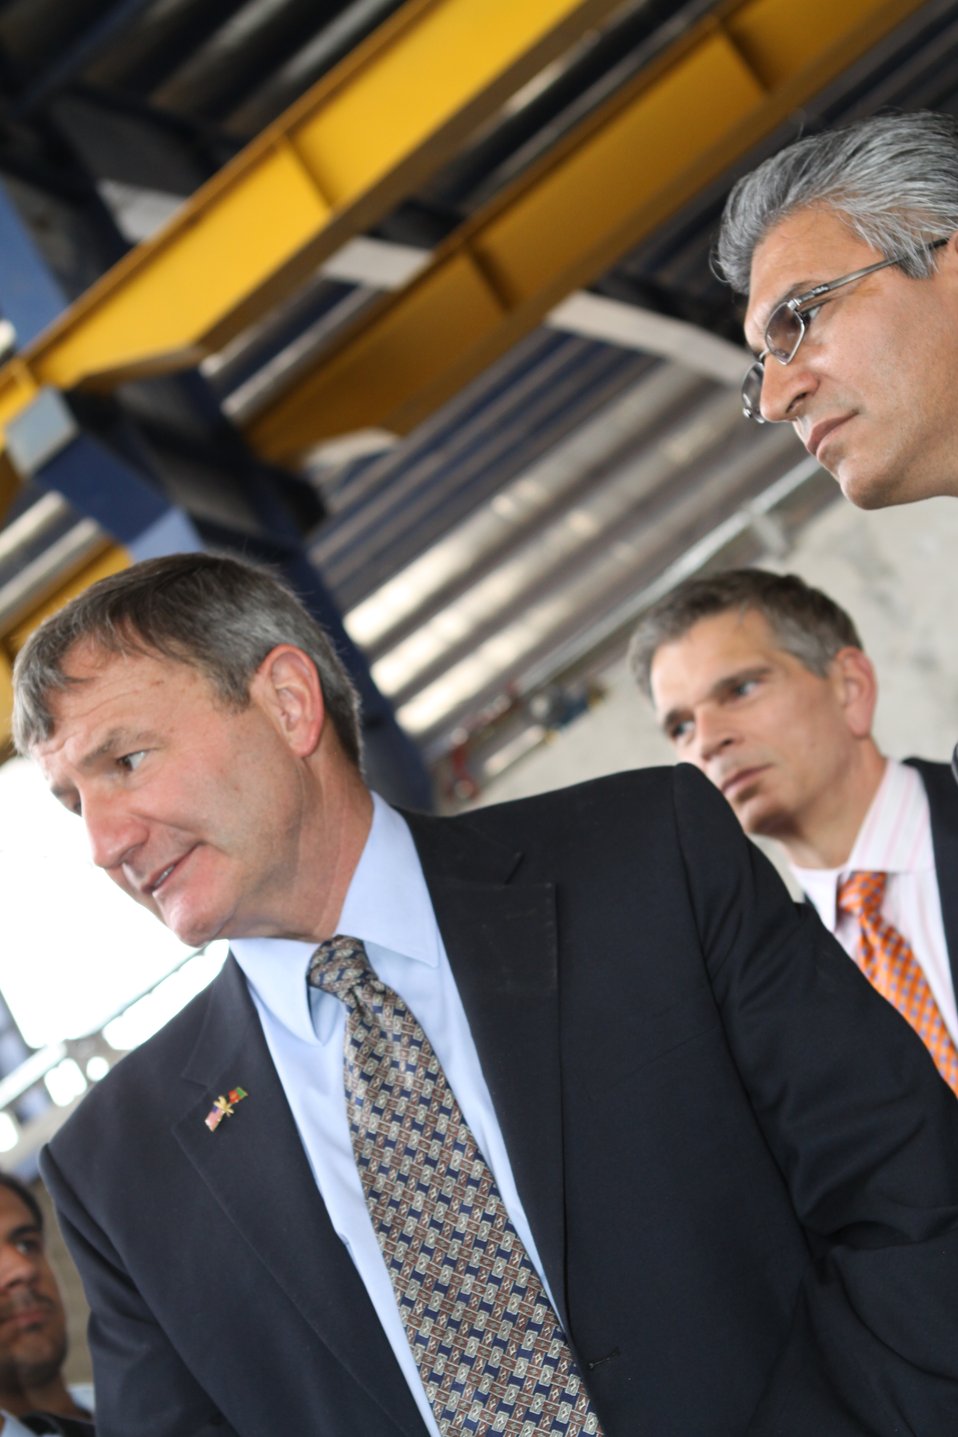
100525 Hirat Marble Conference 443